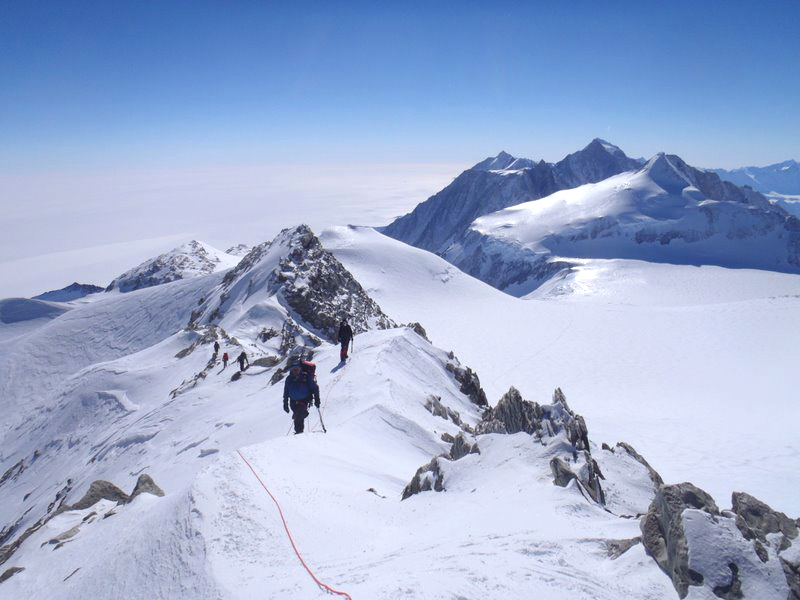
Standing Atop the Bottom of the Earth

The U.S. Air Force Seven Summits team makes its way up to Mount Vinson's 16,077-foot summit. The team arrived at Antarctica's highest peak Dec. 9, 2010.